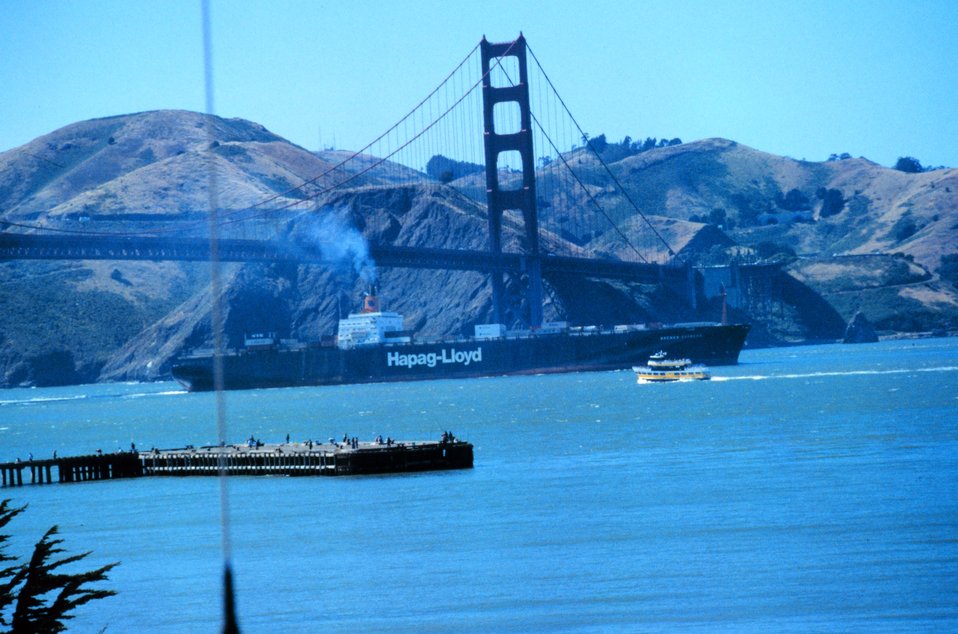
The Golden Gate Bridge as seen from atop NOAA's Gulf of the Farallones National Marine Sanctuary Office at the Presidio, San Francisco.